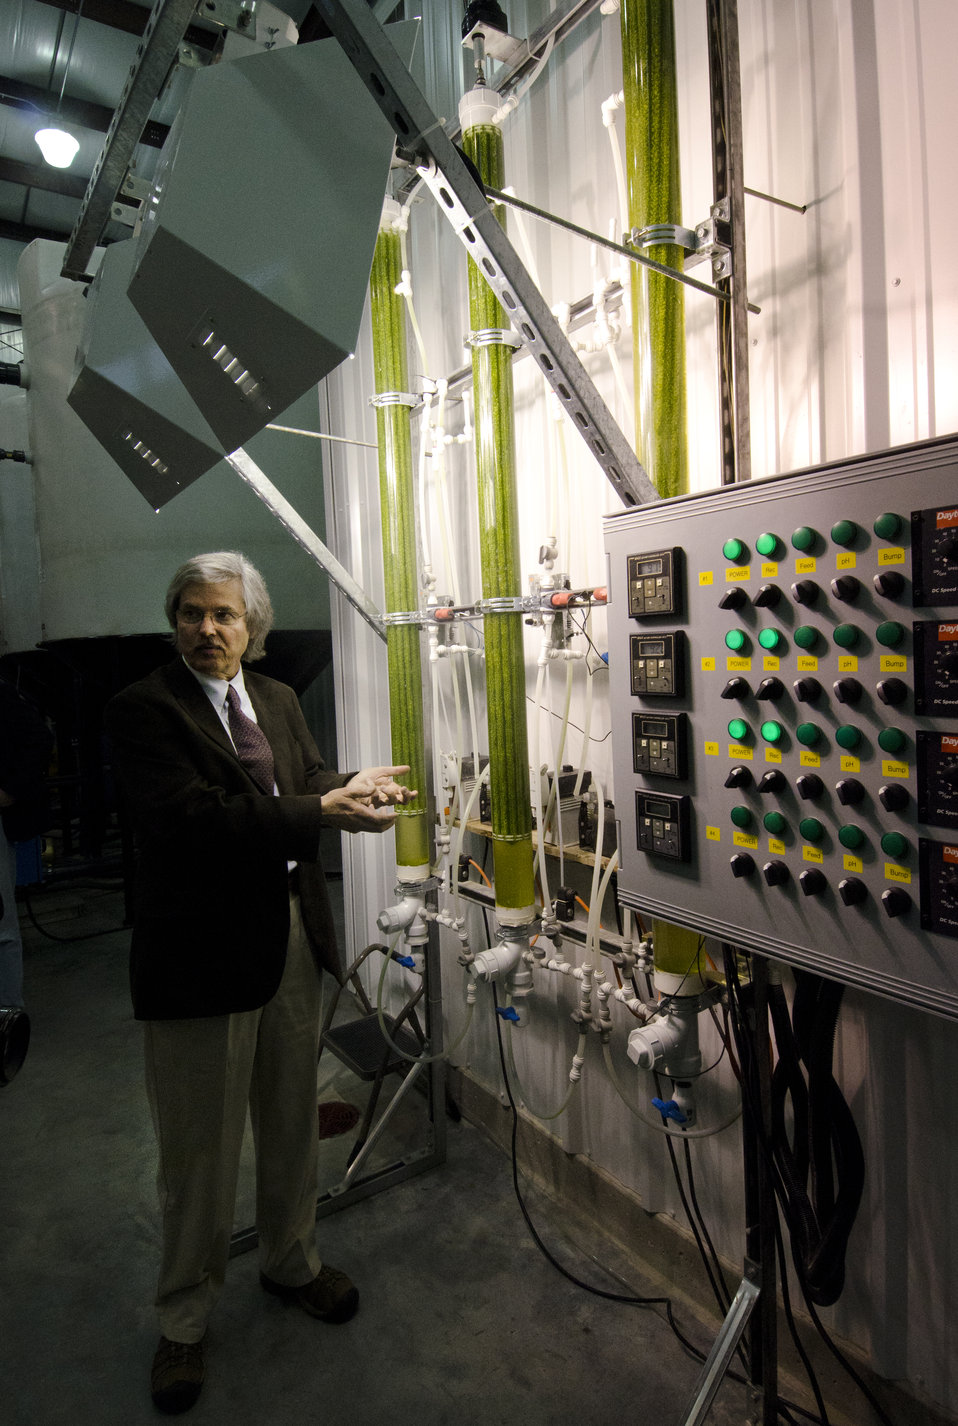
BioProcess Algae Chief Scientific Officer John Haley of the Green Plains Renewable Energy (GPRE), Inc. (GPRE) showing the bioreactors from the BioProcess Algae pilot project to Agriculture Secretary Tom Vilsack during his tour of the facility on Friday, Apr. 15, 2011. The successful completion of the pilot project enabled the company to scale up to commercial-sized reactors. This operation is co-located within GPRE’s ethanol factory where BioProcess Algae technology is used to treat waste products, carbon dioxide, recycled heat and water to mass-produce algae. Algae from this facility are used for animal feeds, pharmaceutical and beauty products.